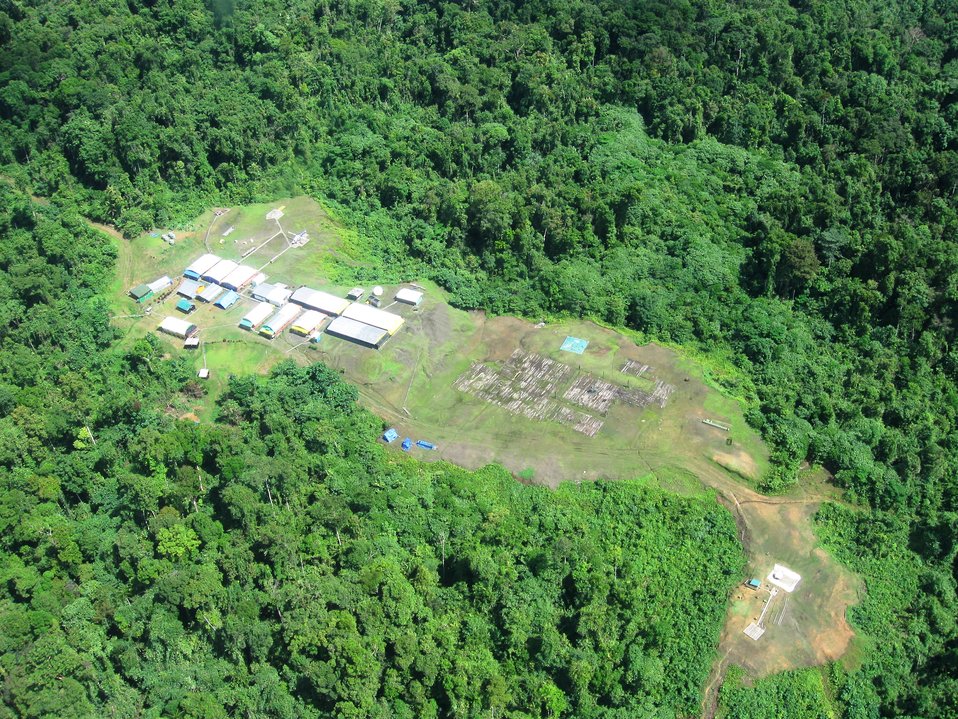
Aerial Photo of an EGCI Project Area

An aerial photo is taken from a helicopter of one of the project areas for the U.S. Department of State's Energy Governance and Capacity Initiative (EGCI) near Port Moresby, Papua New Guinea, on June 19, 2010.